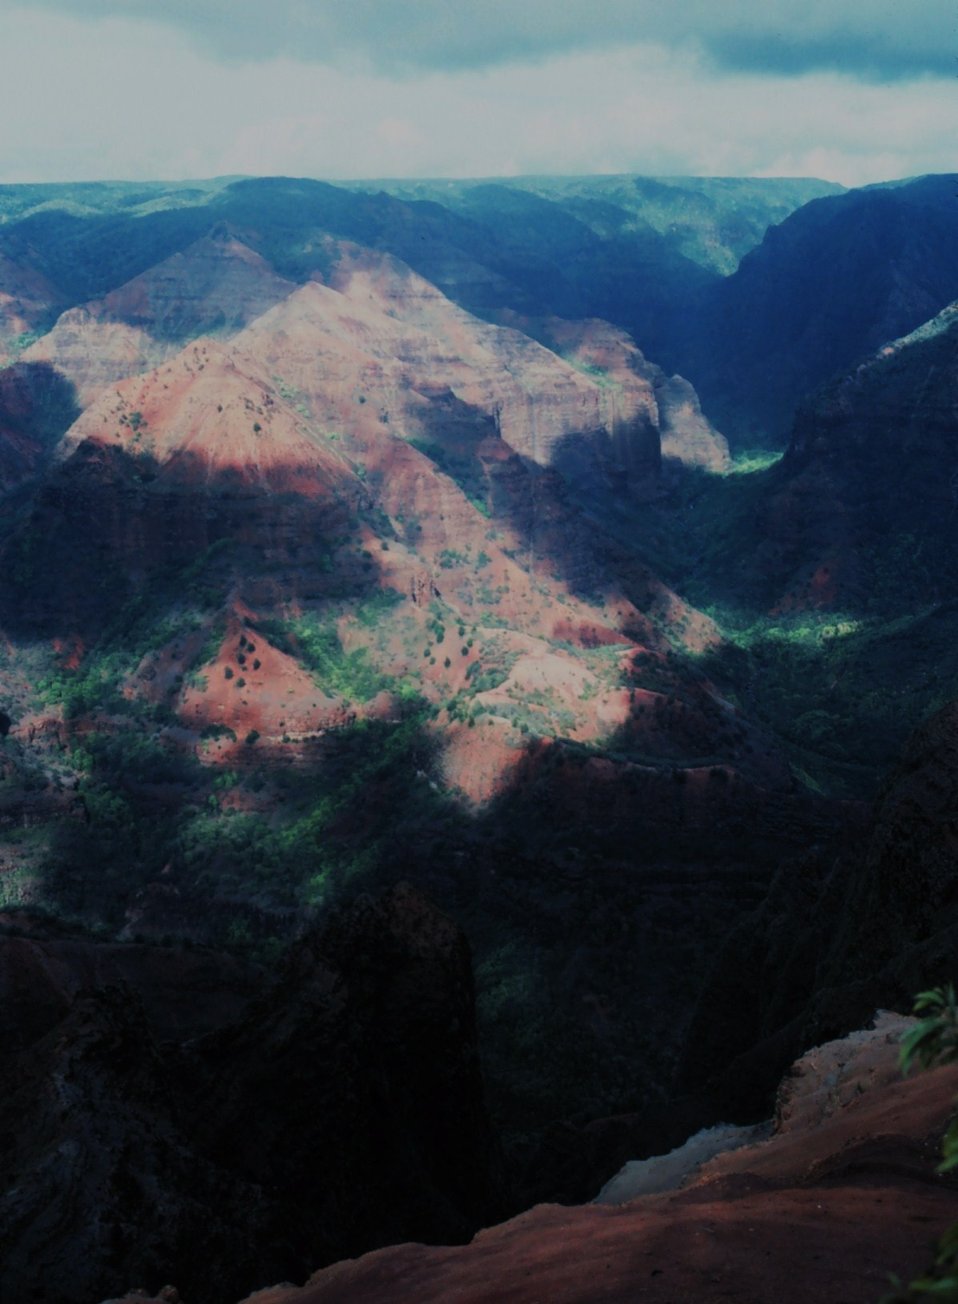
Waimea Canyon - the Grand Canyon of the Pacific